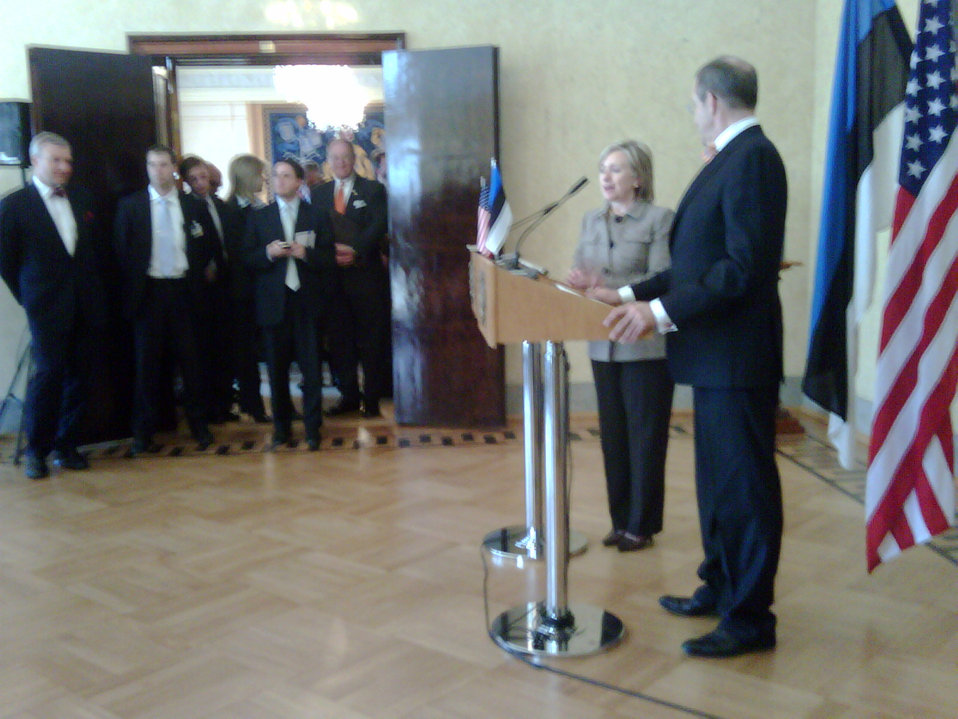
Secretary Clinton Meets With Estonian President

U.S. Secretary of State Hillary Rodham Clinton meets with Estonian President Toomas Hendrik Ilves in Tallinn, Estonia, April 22, 2010.